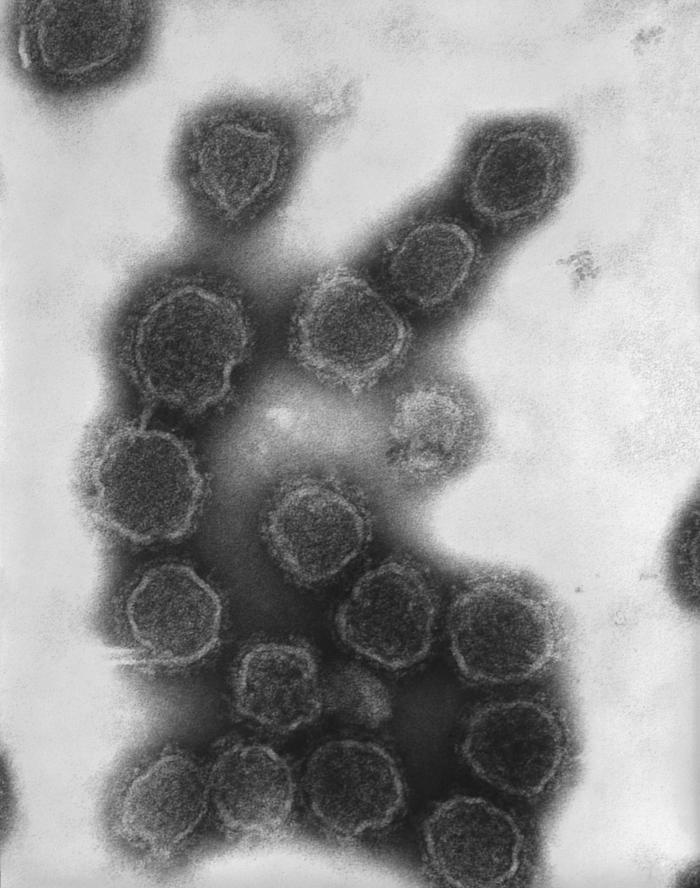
This negatively-stained transmission electron micrograph (TEM) revealed the presence of numerous California encephalitis virus virions. Contained within its enveloped capsid, the genome of this Bunyaviridae family member consists of three segments of negative-sense single-stranded RNA ((-)ssRNA).